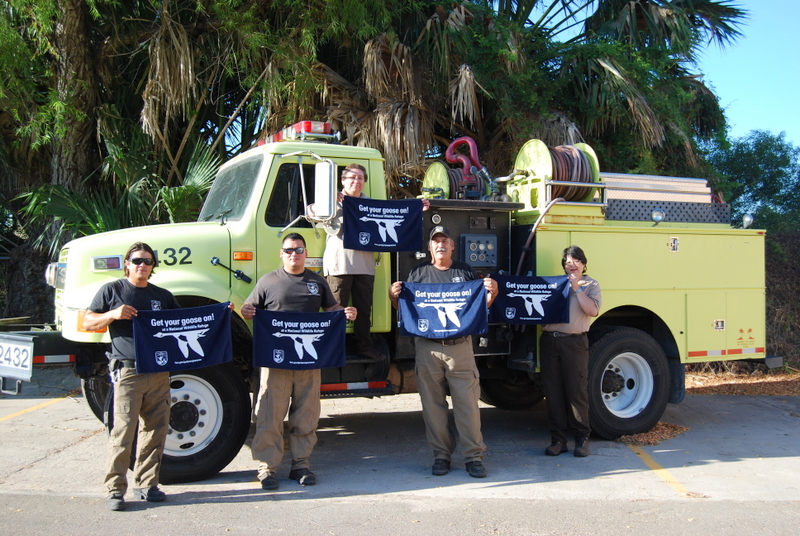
Get Your Goose On!

Fire management crew on their fire engine at the USFWS South Texas Refuge Complex.